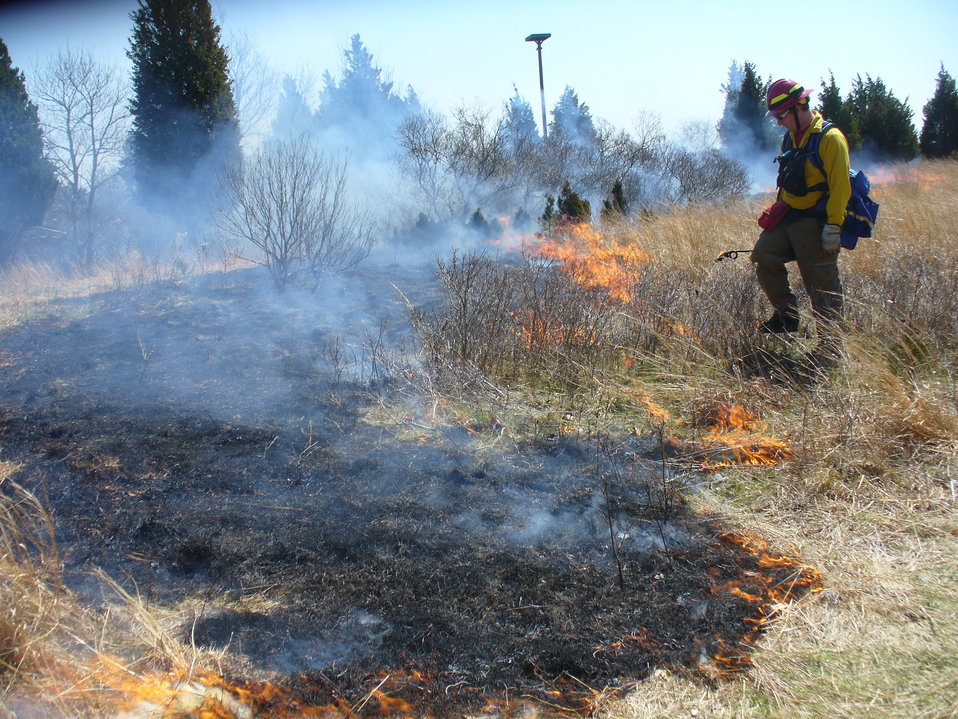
Prescribed burn at Conscience Point

Refuge staff conducting a prescribed burn at Conscience Point National Wildlife Refuge.